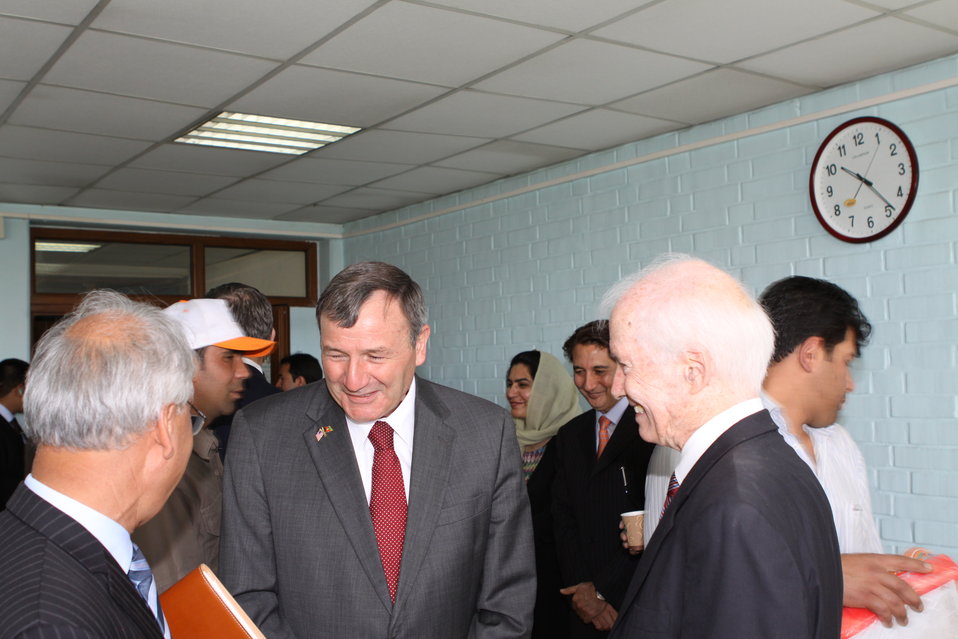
100526 AUAF Graduation 033